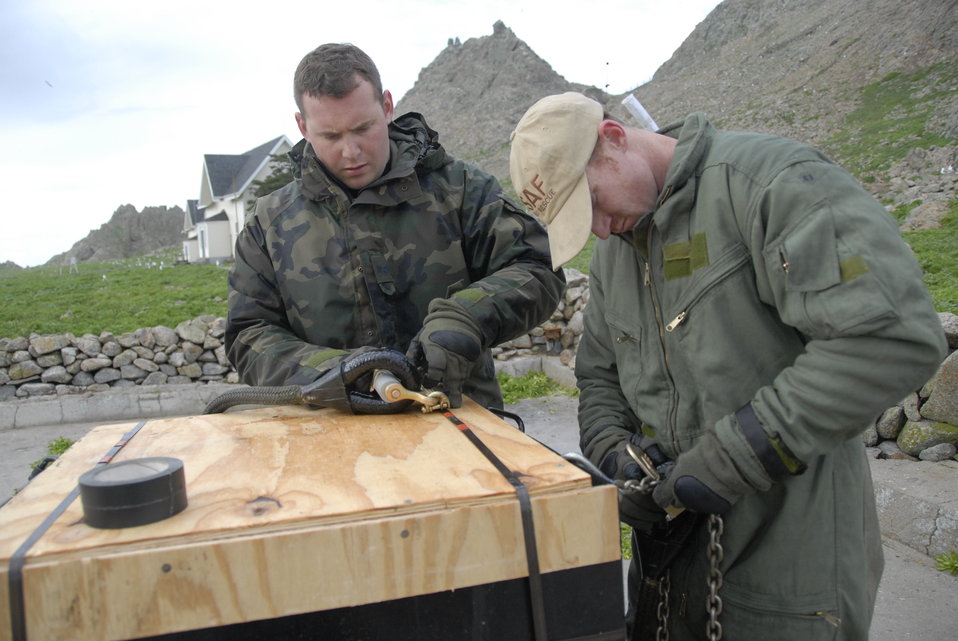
FARALLONS BATTERY MISSION

Staff Sgts. Andrew Hedin and Joseph Kenney prepare photovoltaic batteries Feb. 17 for sling transport to the U.S. Fish and Wildlife Service research facility on Farallon Island, which sits some 30 miles west of San Francisco. Airmen from the California Air National Guard's 129th Rescue Wing at Moffett Federal Airfield, Calif, are assisting with the swap-out of batteries that power a lighthouse and a workshop at the research facility. The NCOs are HH-60G Pave Hawk helicopter flight engineers with the 129th RQW.